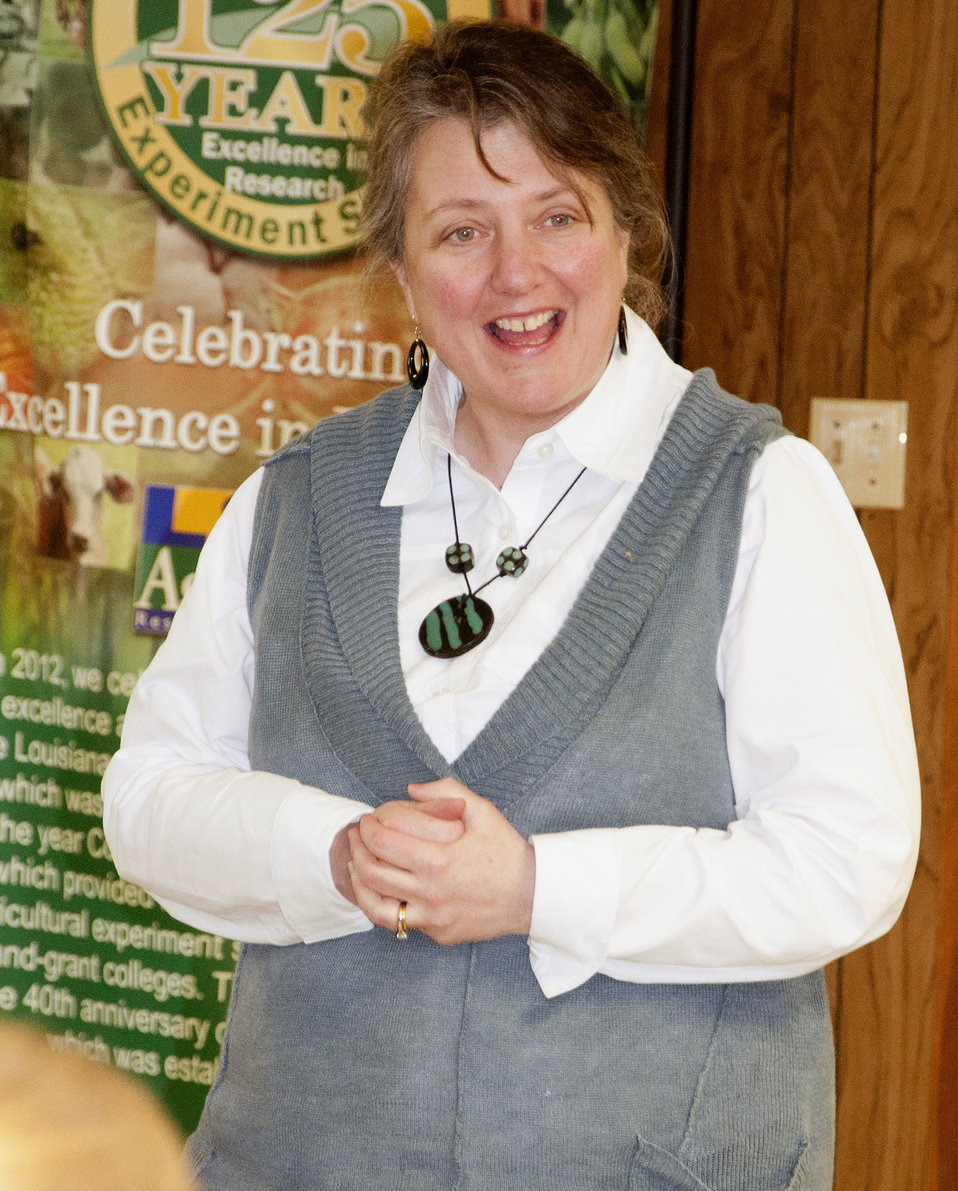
Agriculture Deputy Secretary Kathleen Merrigan addresses attendees at Kippy and Kari King's farm in Louisiana at the presentation of the U.S. Department of Agriculture’s (USDA) Farm Service Agency (FSA) microloan to implement Environmental Quality Incentives Program (EQIP) conservation practices on their farm on Feb. 25, 2013.